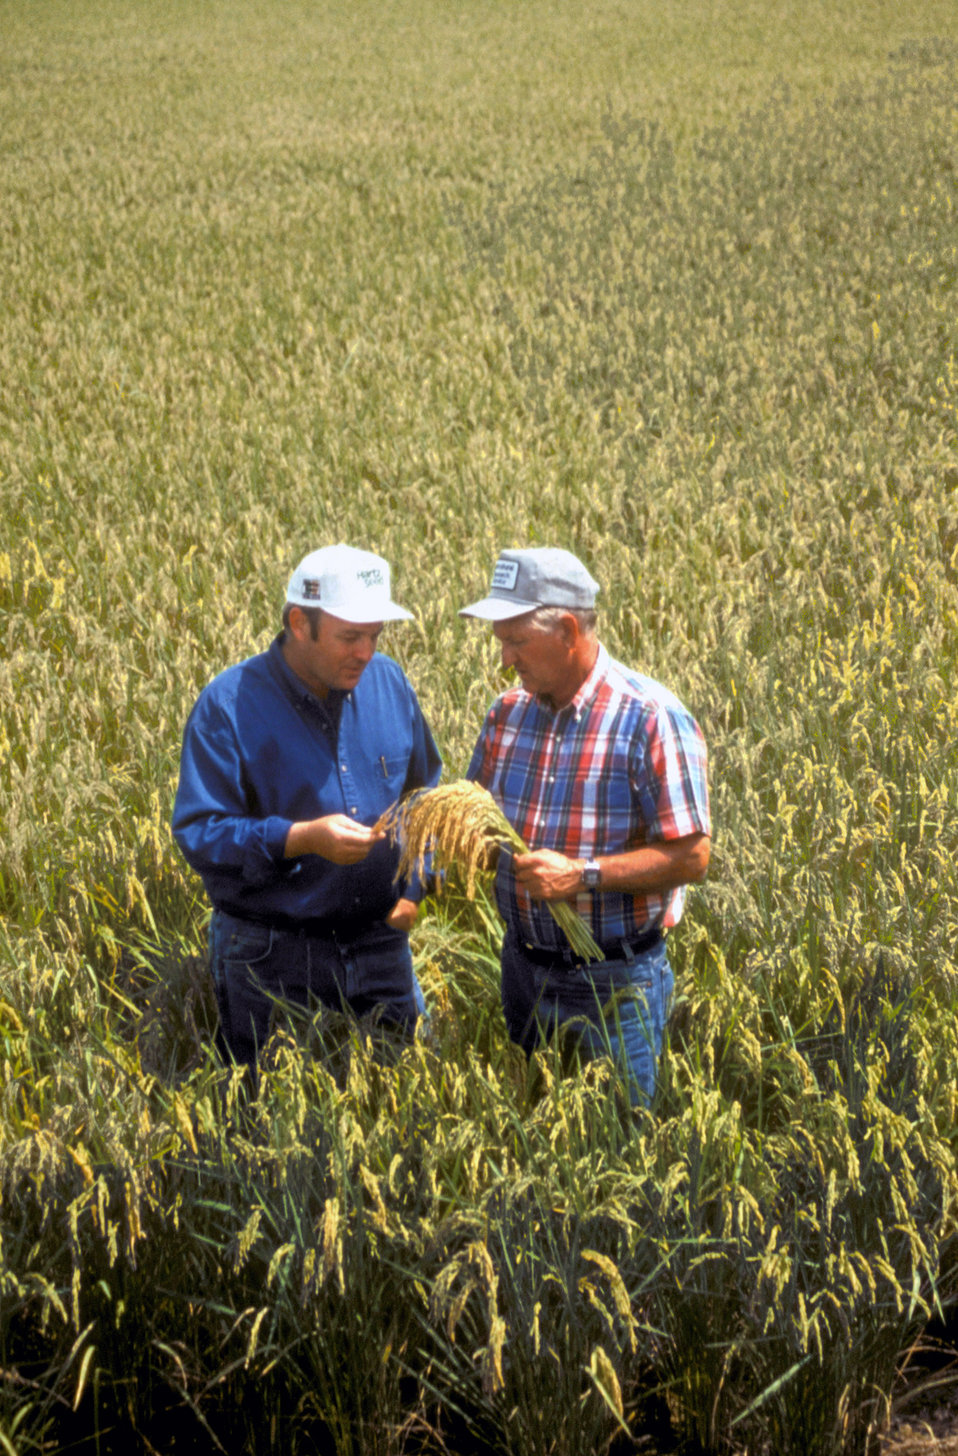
Rice grower Chris Isbell and U.S. Department of Agriculture (USDA) Agricultural Research Service (ARS) technician Bob Dilday check a field of Akita Komachi rice.